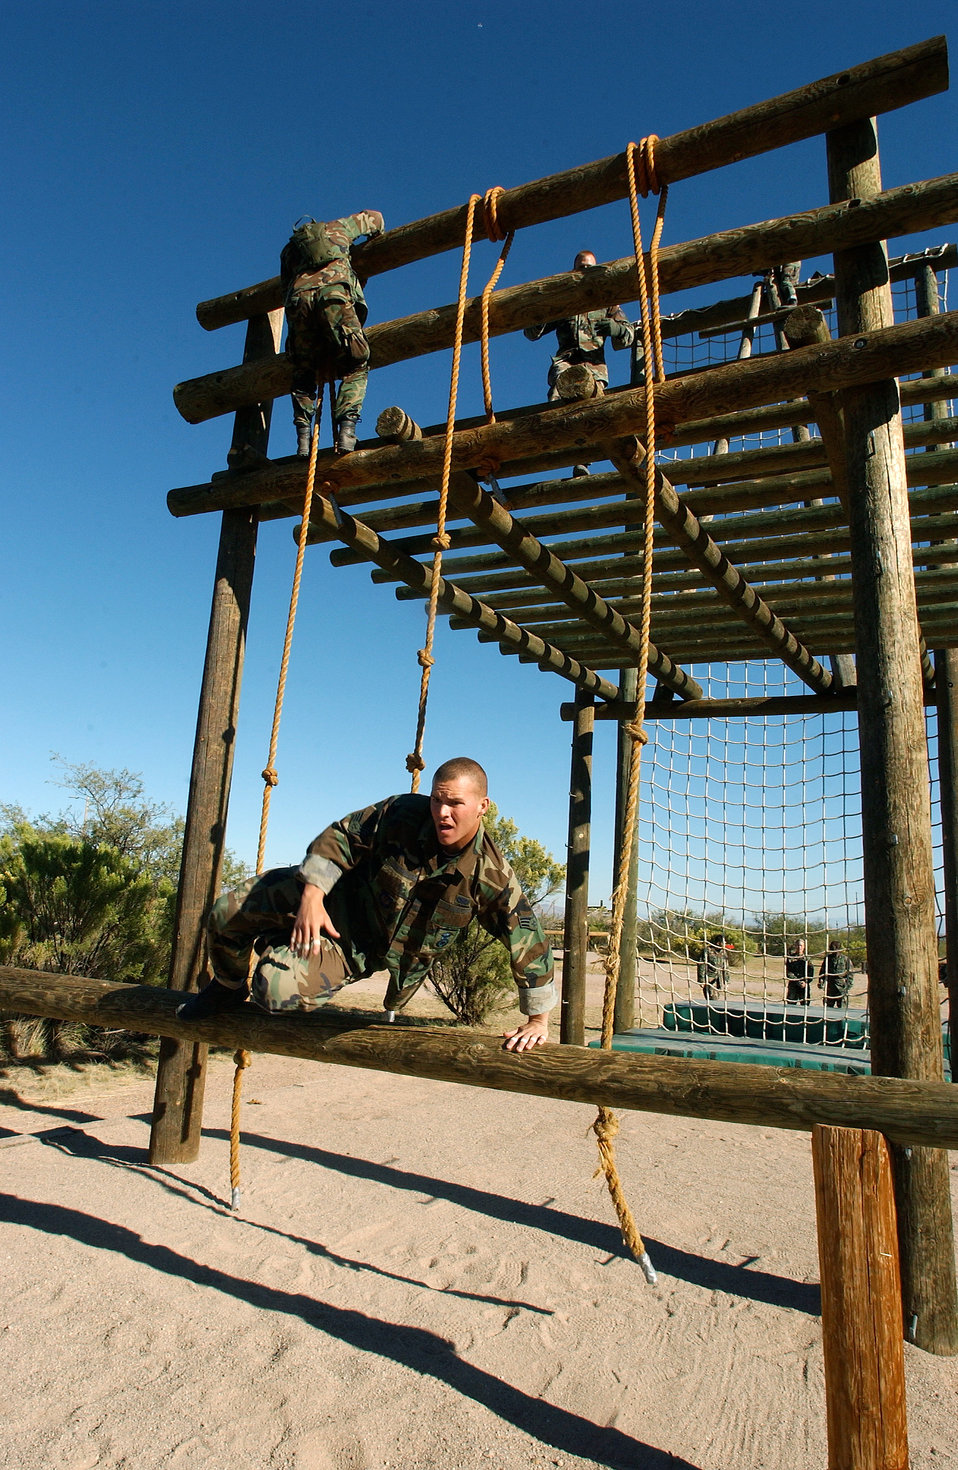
FORT HUACHUCA, Ariz. -- Senior Airman Dustin McPhillips leaps over the last part of the first training obstacle named